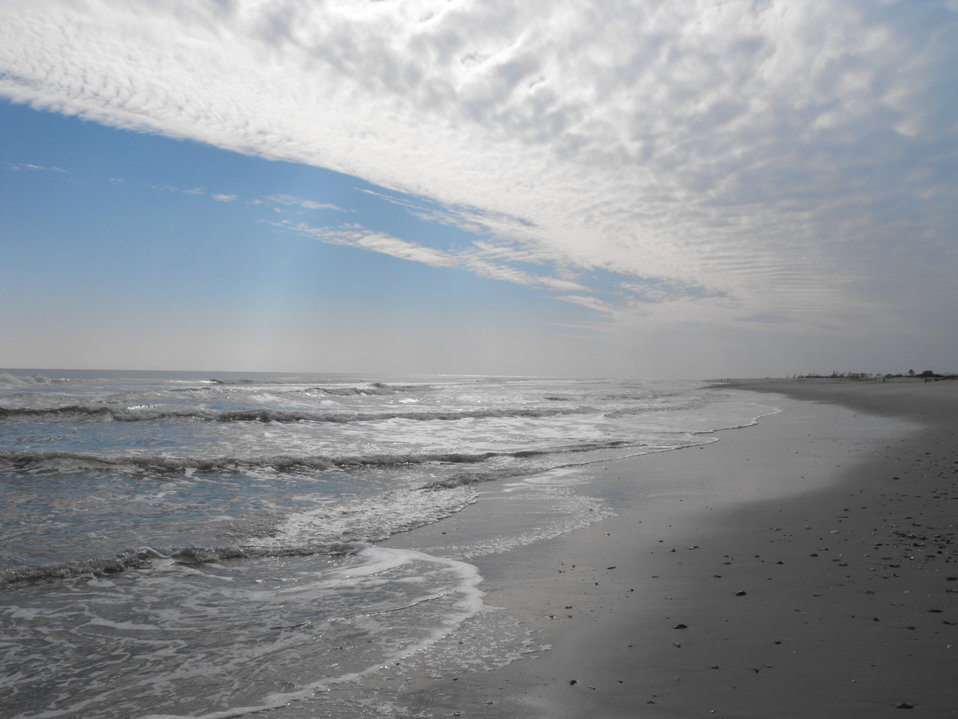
Wild Beach at Chincoteague National Wildlife Refuge / Assateague Island National Seashore.